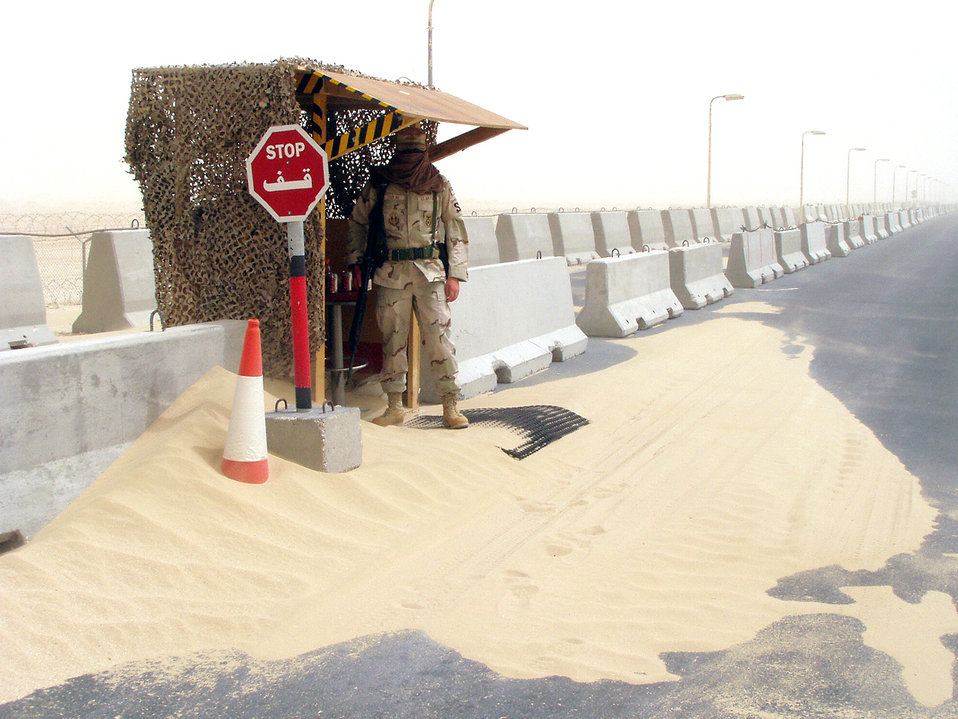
Beach patrol

SOUTHWEST ASIA -- Airman 1st Class Jayson Sterling guards an entry-control point at a forward-deployed location during a sand storm. Airman Sterling is assigned to the 379th Expeditionary Security Forces Squadron and is deployed from Wright-Patterson Air Force Base, Ohio.